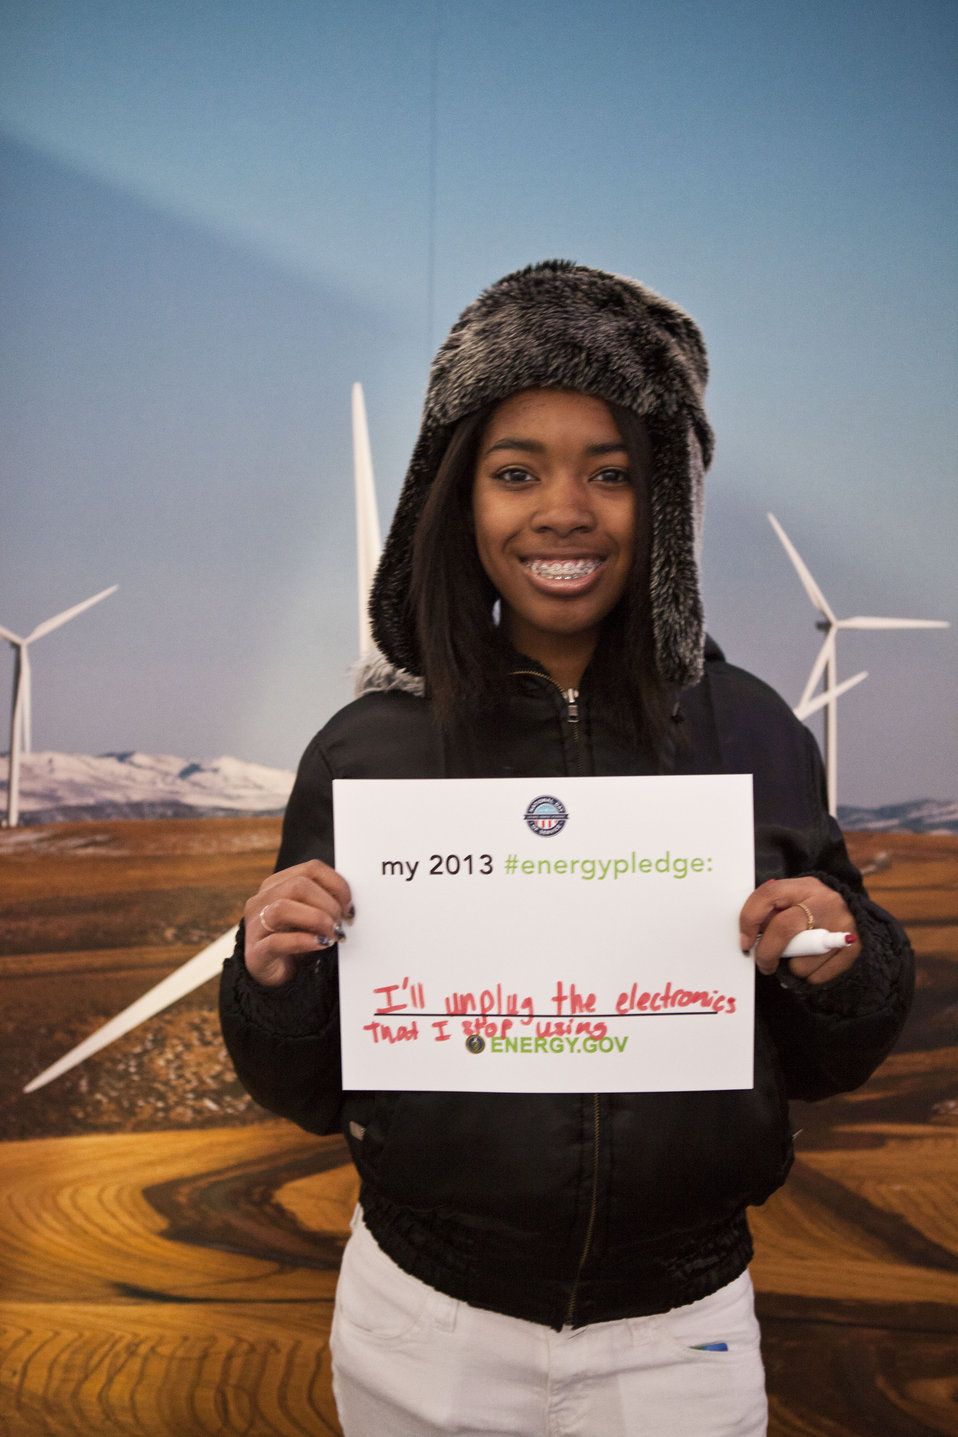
What's your #energypledge?